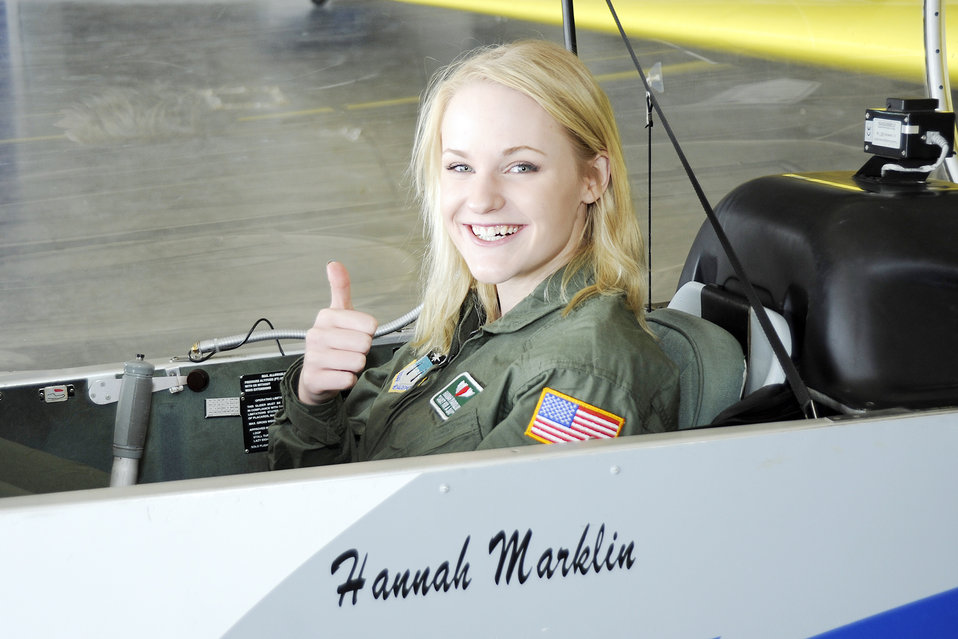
Cadet for a day

Hannah Marklin of Parker, Colo., sits in a U.S. Air Force Academy glider emblazoned with her name Nov. 13, 2009. She was visiting the Academy as